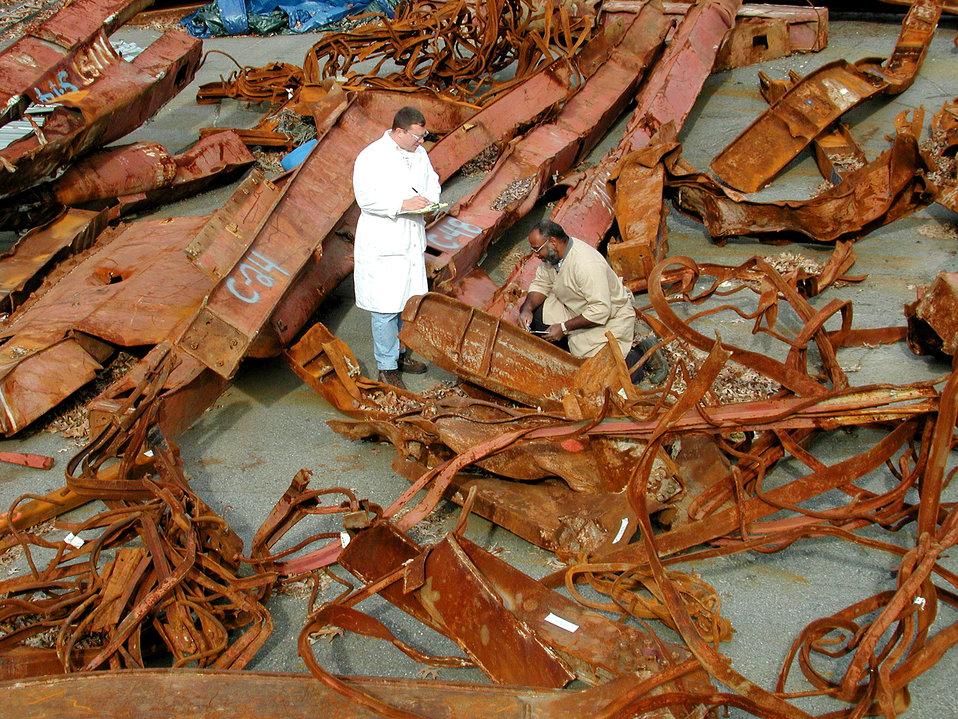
Steel from Collapsed WTC Towers

In 2005, NIST completed a three-year building and fire safety investigation of the probable causes for the post-impact collapse of World Trade Center Towers 1 and 2 following the terrorist attacks of Sept. 11. As part of the investigation, NIST structural experts examined about 250 pieces of steel recovered from the site. Here NIST researchers Stephen Banovic (left) and Frank Davis take inventory.